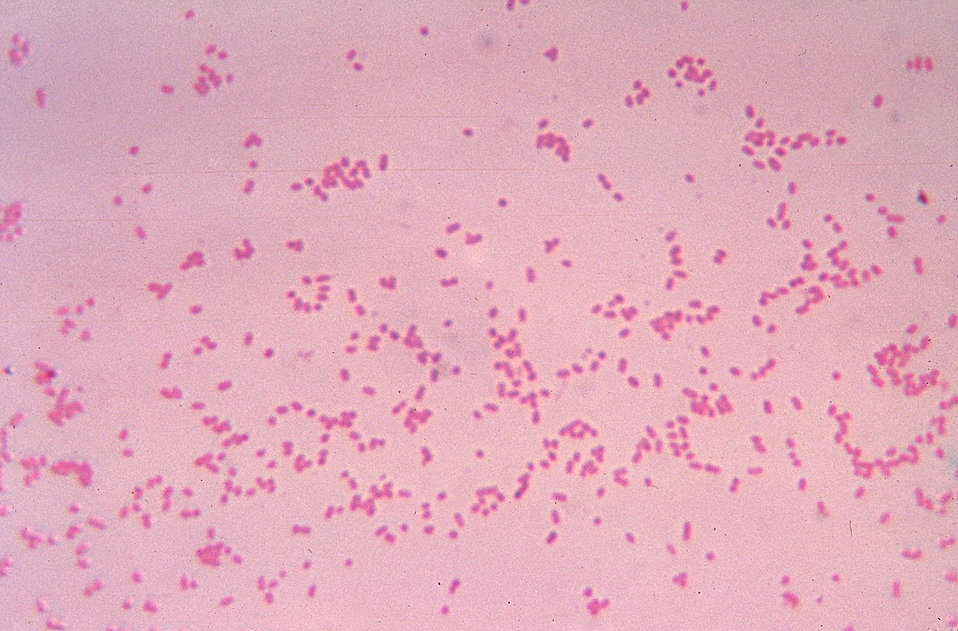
This micrograph depicts Bacteroides fragilis subsp. distasonis bacteria cultured in blood agar medium for 48 hours.